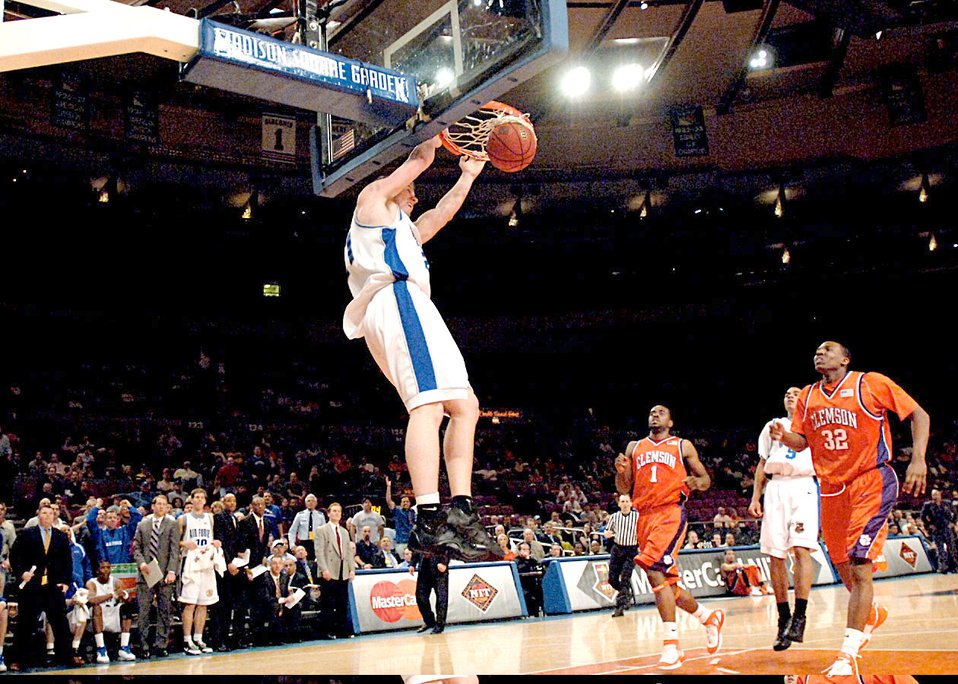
Falcons lose heartbreaker to Clemson in NIT semifinals

Air Force forward Jake Burtschi throws down a two-hand dunk during the National Invitation Tournament semifinal game against Clemson March 27 at Madison Square Garden. Clemson survived a rally by the Falcons in the final minutes to win 68-67 and advance to the NIT championship March 29 against West Virginia.